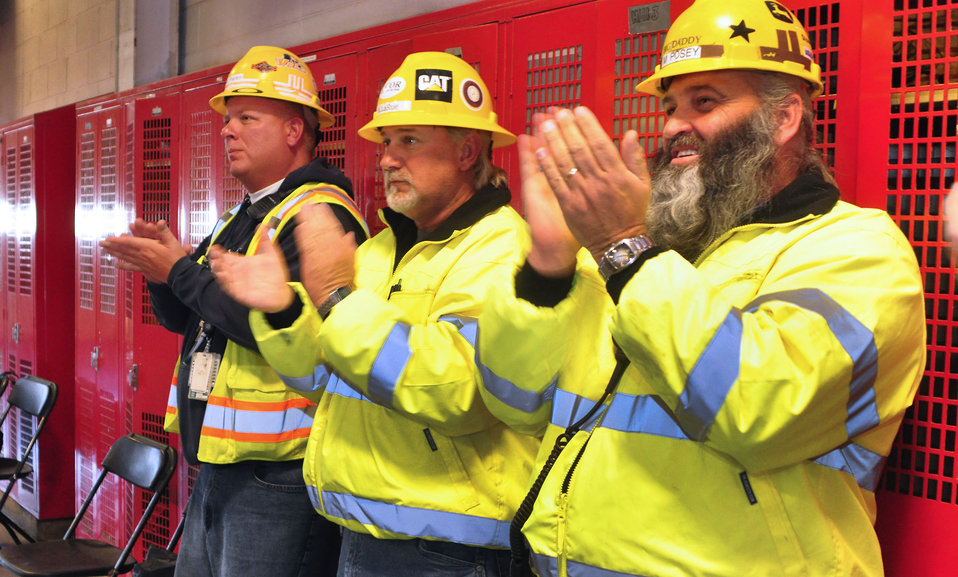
Last Part of K-25 Coming Down Oak Ridge 2013

13-157-1 DOE photo Lynn Freeny 12-19-2013 Oak Ridge Tennessee